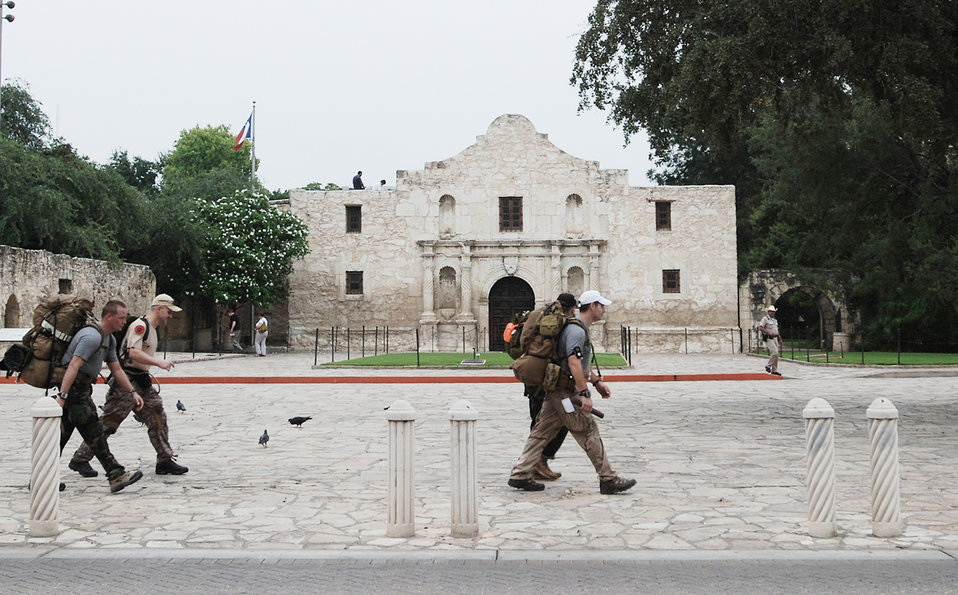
Air Force combat controllers march in memory of fallen brethren

Air Force combat controllers pass through downtown San Antonio as they march more than 800 miles from Lackland Air Force Base, Texas, to Hurlburt Field, Fla., in 11 days. They are marching to honor 12 special tactics Airmen who died in Iraq and Afghanistan.